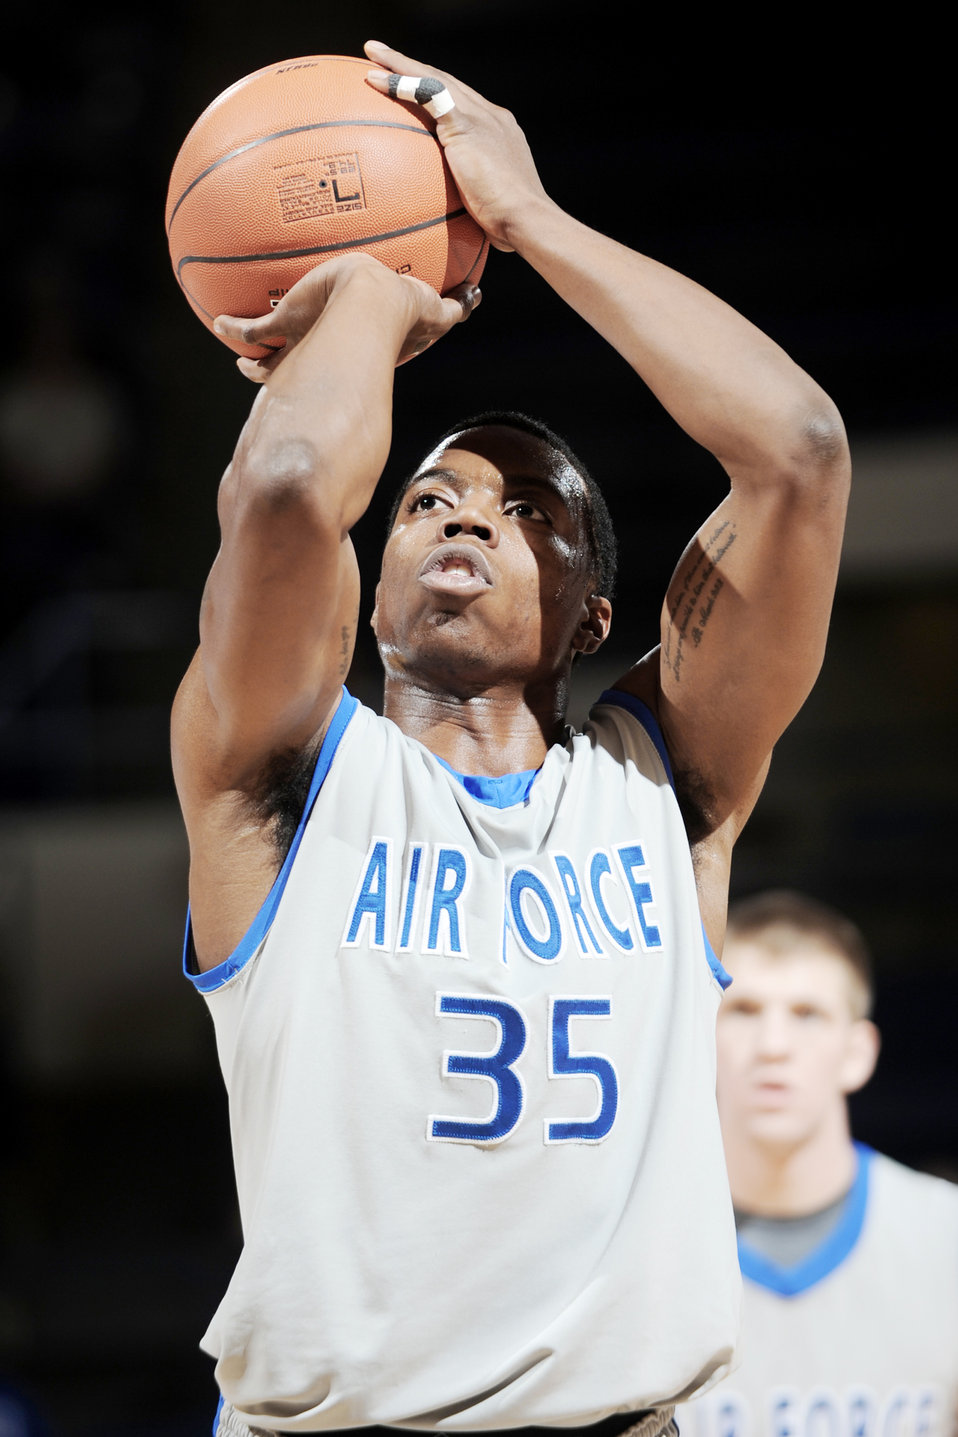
Falcons vs Northern Arizona

Air Force Academy junior guard Evan Washington shoots a free throw after being fouled during the Falcons' game against Northern Arizona at the Academy's Clune Arena Dec. 19, 2009. Air Force lost the game 60-52.